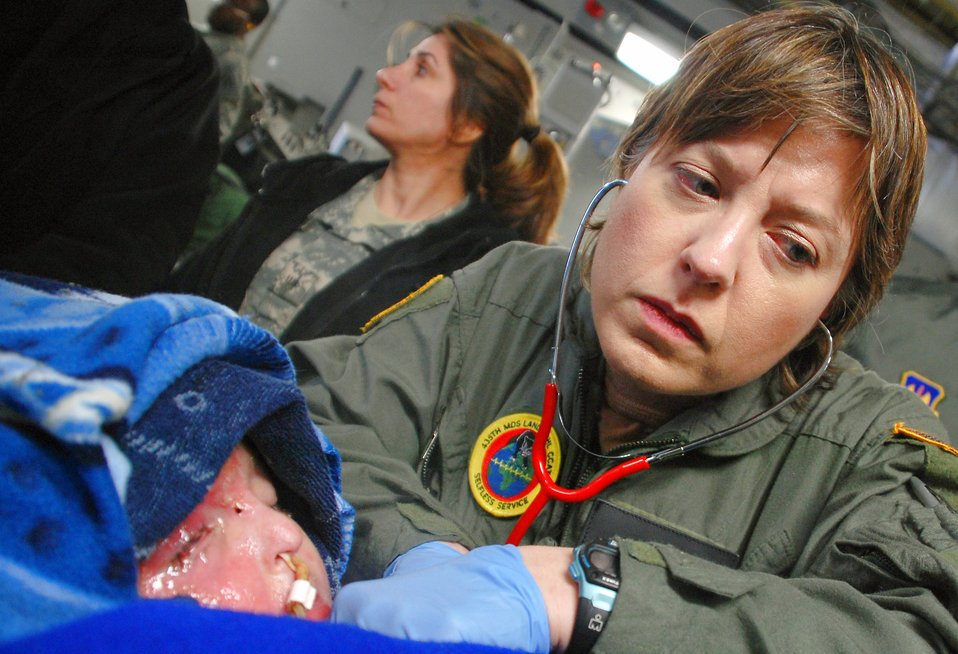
Little, but strong: Burned Iraqi child overcomes odds

Navy Lt. Cmdr. (Dr) Michelle Perello checks vital signs on a young Iraqi boy on board a C-17 Globemaster III. The boy is on his way from Balad Air Base, Iraq, to a children's hospital in Cincinnati. The flight stopped in Ramstein, where Dr. Perello handled the boy's care.